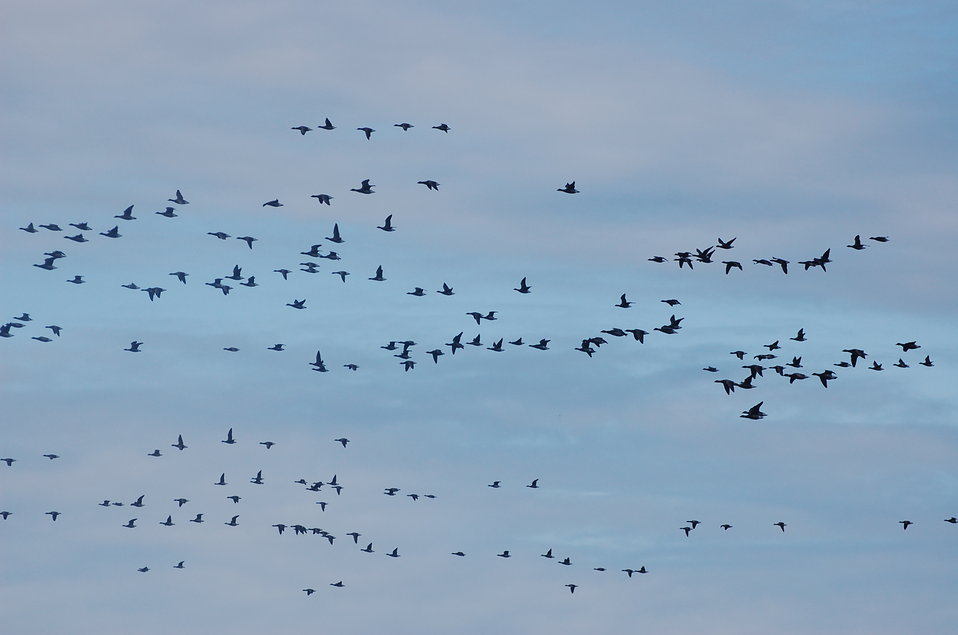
Brant at Izembek Lagoon, Izembek National Wildlife Refuge